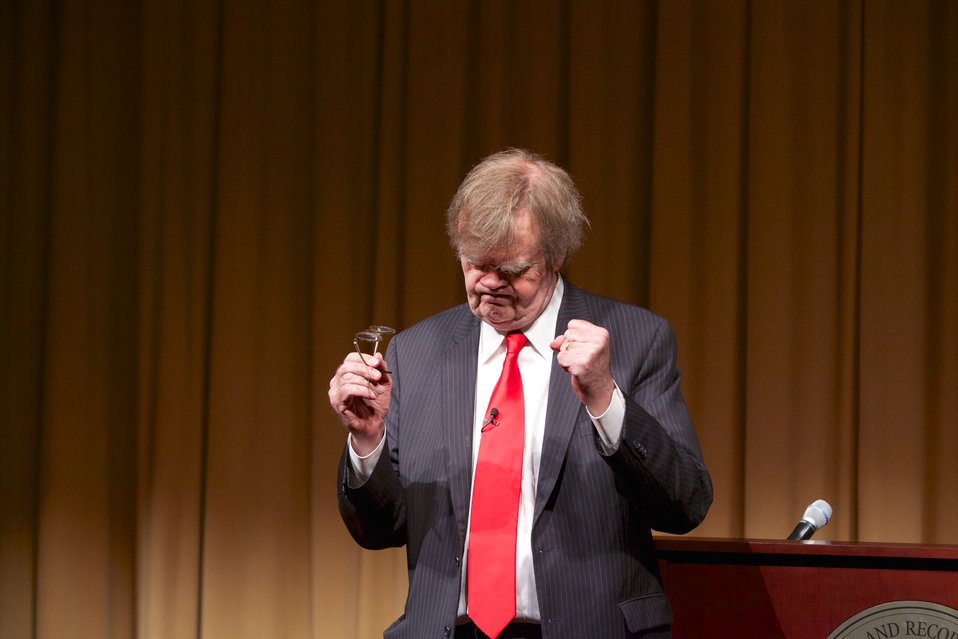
The Keillor Reader